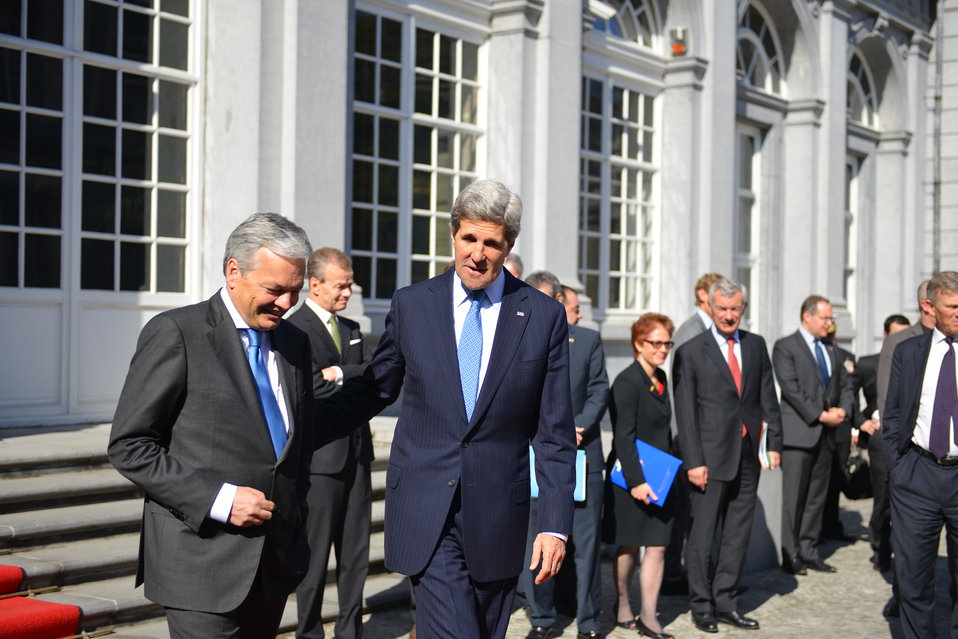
Secretary Kerry Walks With Belgian Foreign Minister Reynders

U.S. Secretary of State John Kerry walks with Belgian Foreign Minister Didier Reynders at Egmont Palace in Brussels, Belgium, on April 24, 2013.